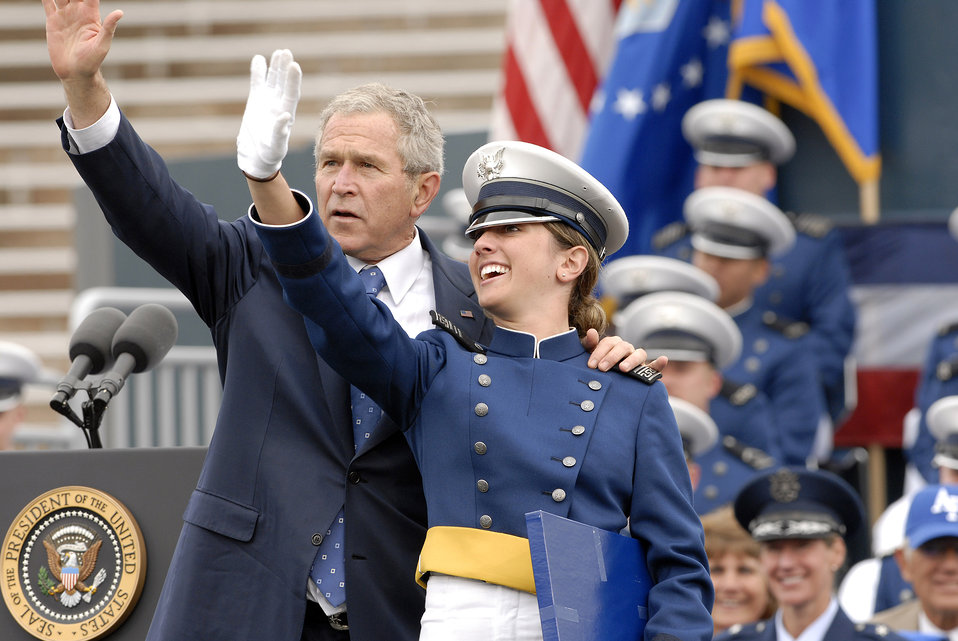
Academy Class of 2008 graduates

President George W. Bush waves to the family of newly-graduated 2nd Lt. Katie Newkirk during the U.S. Air Force Academy Class of 2008 Graduation Ceremony at Falcon Stadium May 28. The Class of 2008, the 50th Academy class, comprised 1,012 cadets who will enter the Air Force as second lieutenants.